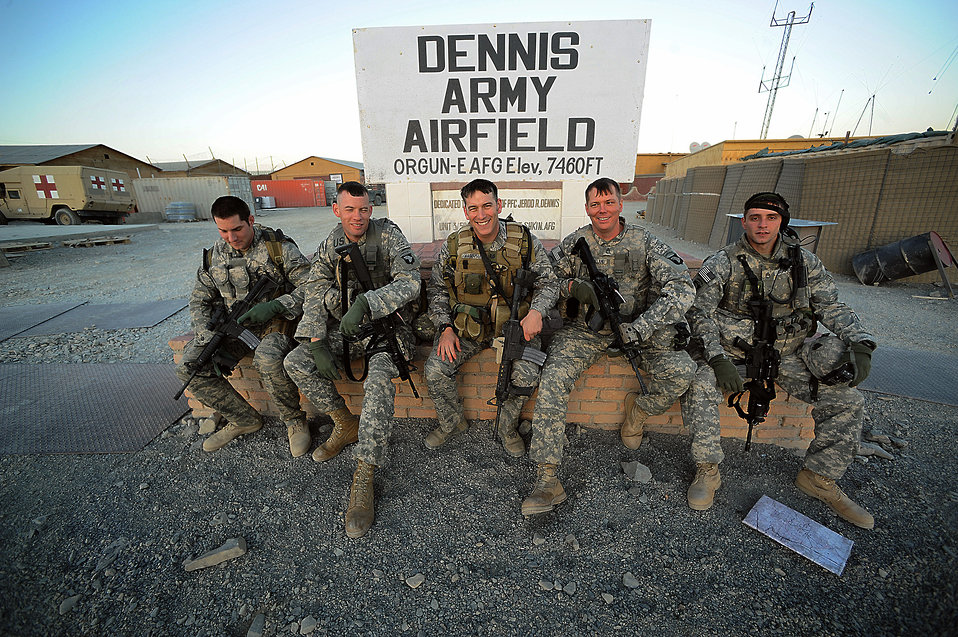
TACPs provide vital link between pilots, ground troops

Tactical air control party members Airman 1st Class Eric Czachor (far left) and Tech. Sgt. Harvey Wagenmaker (center) sit with their Army comrades Staff Sgt. William Falin Sgt., 1st Class James Strickland, and Staff Sgt. Chris Summers at Forward Operating Base Orgun-E, Afghanistan. TACPs are responsible for planning, communicating and coordinating close-air support for Army ground units.